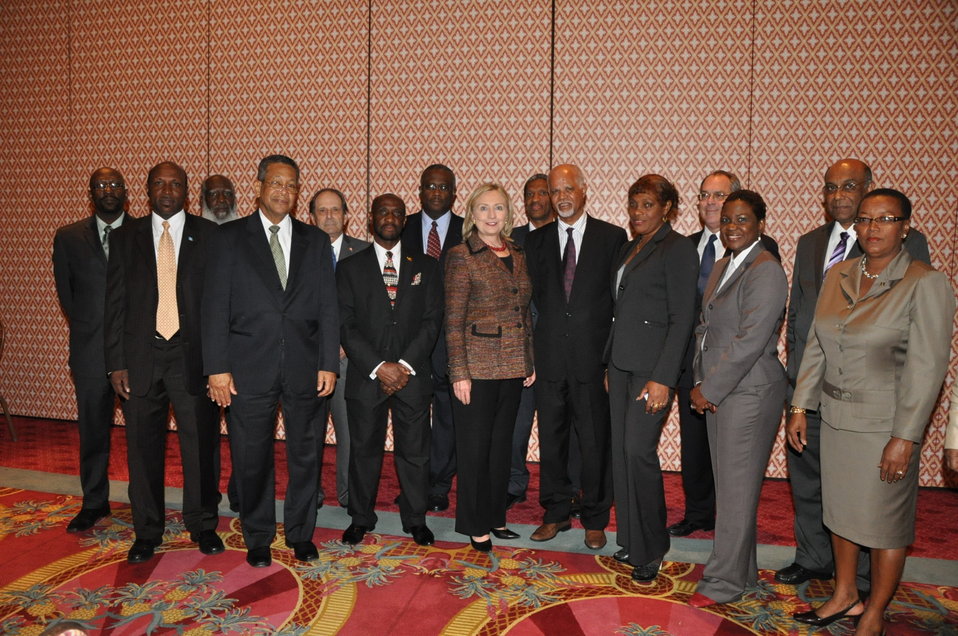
Secretary Clinton Poses for a Photo With CARICOM Ministers

U.S. Secretary of State Hillary Rodham Clinton poses for a photo with other foreign ministers in the Caribbean Community (CARICOM) at a reception in Montego Bay, Jamaica, on June 22, 2011.